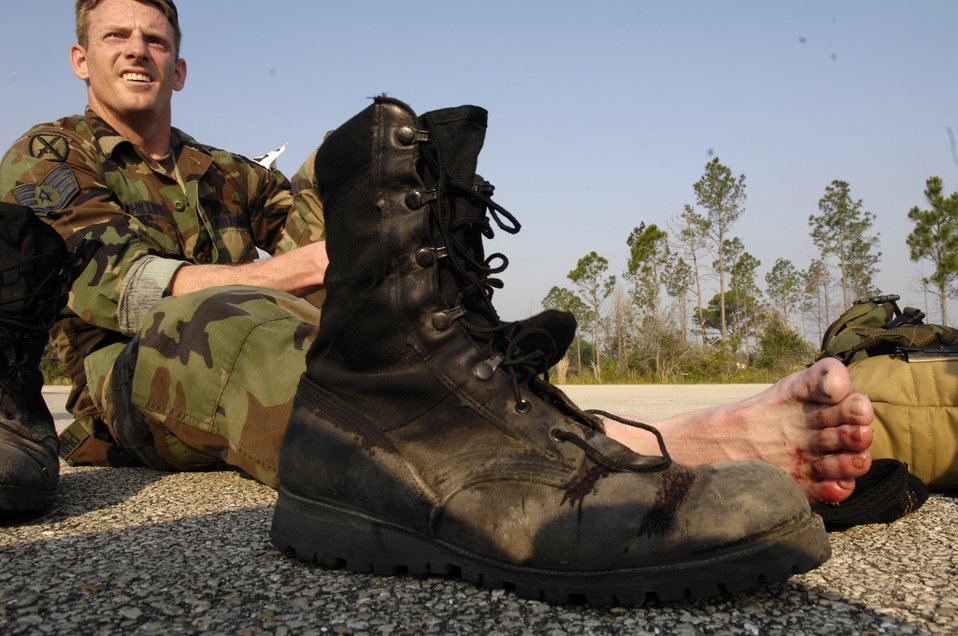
These dogs are barking?

Staff Sgt. Brad Phillips rests his feet after a 12 mile ruck march May 11 during Dragon Challenge at Avon Park, Fla. Dragon Challenge builds teamwork within a unit and enhances combat abilities. It also tests each individual's skills in land navigation, live fire and physical fitness.